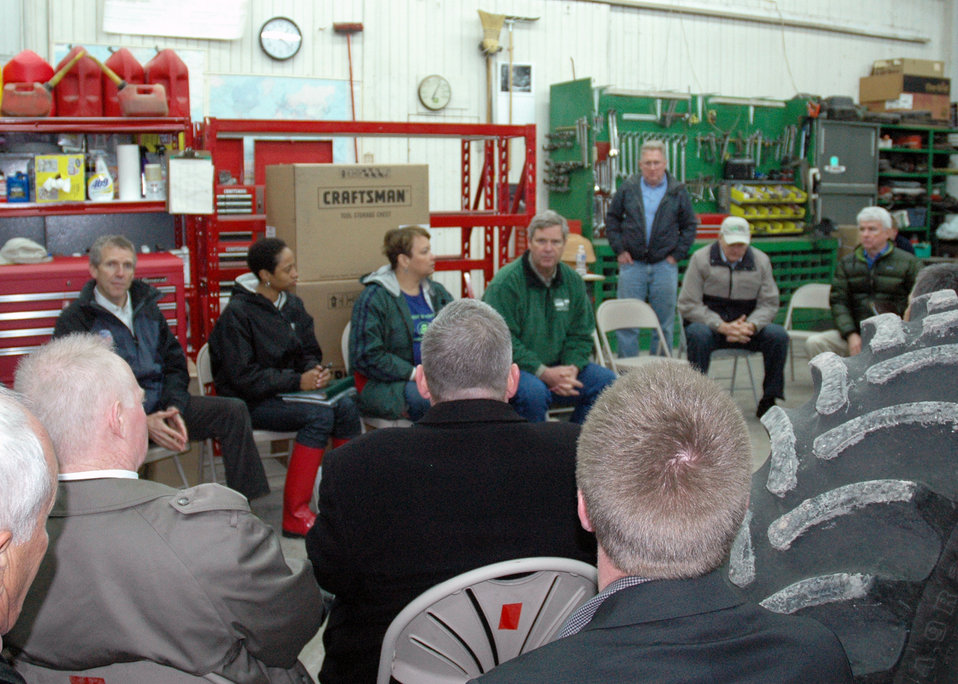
Enviornmental Protection Agency Administrator Lisa P. Jackson (center left) and Agriculture Secretary Tom Vilsack (center right) listen to concerns from stakeholders in the Wassenaar's machine shed on their farm in IA, on Tuesday, April 16, 2011.